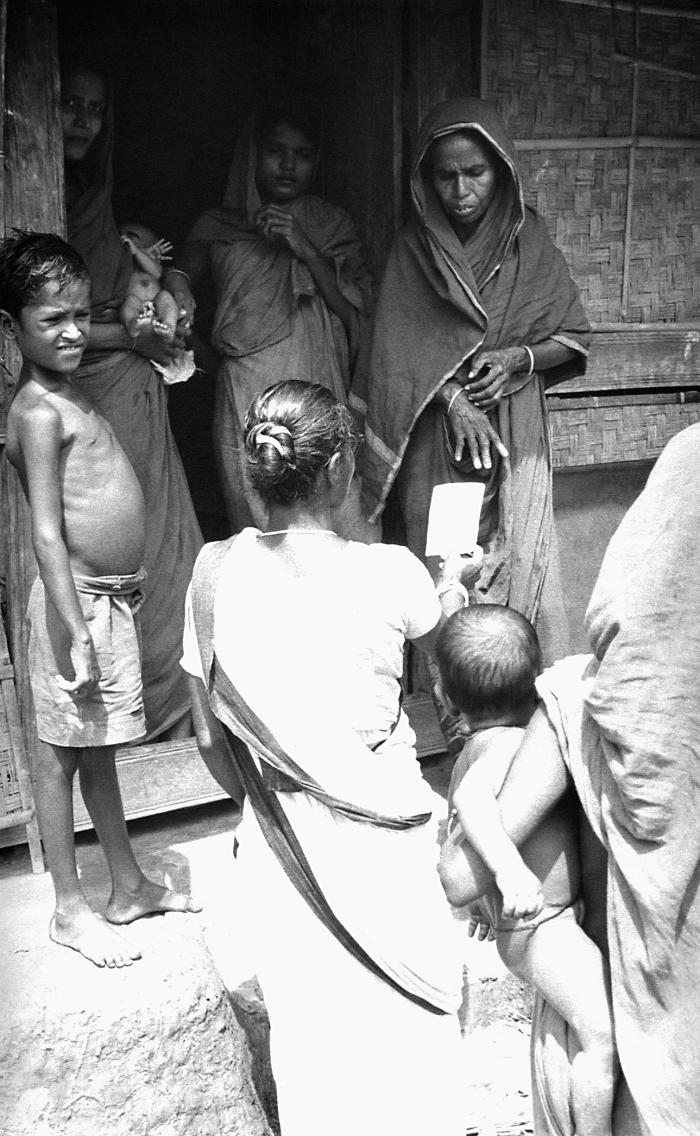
This 1975 photograph depicted a local smallpox eradication team volunteer discussing the 'smallpox card' image showing a smallpox case example, with a village resident, and her family members. The 'smallpox card' not only presented an example of the disease, but it described the reward associated with ones discovery of a smallpox case, and asked if one knew of any such cases. During these country wide searches for smallpox, each one of the 12 million homes had to be visited, in order to show residents the smallpox case photograph, as well as ask pertinent, investigative questions.